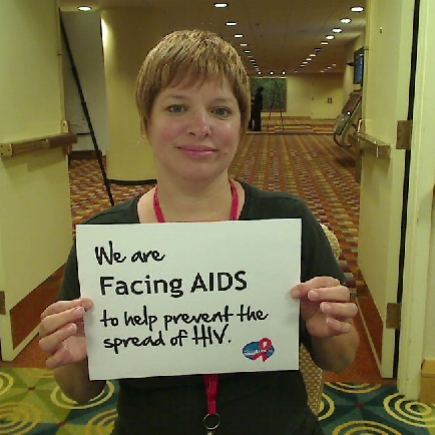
We are Facing AIDS to help prevent the spread of HIV.